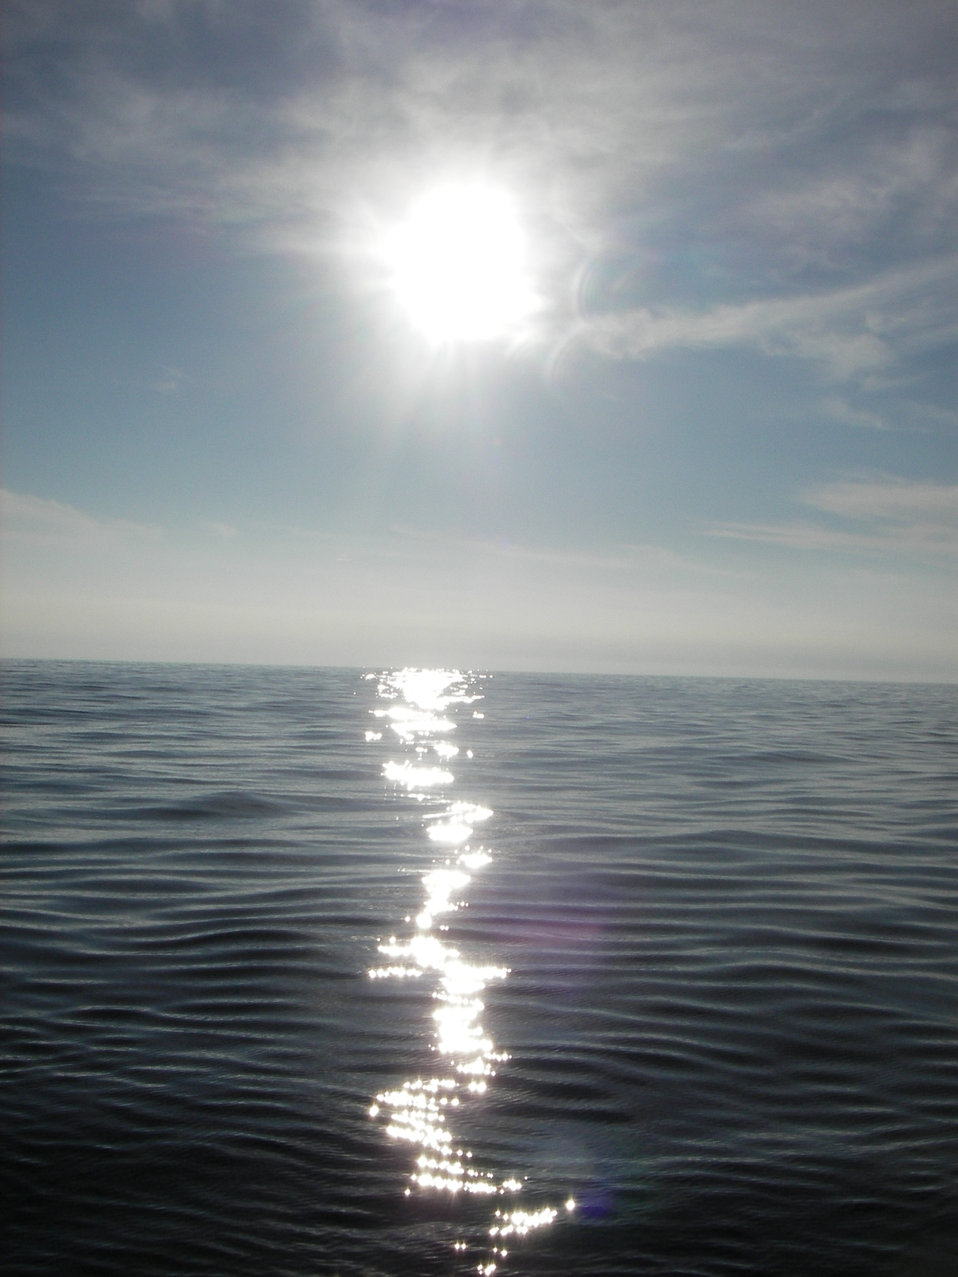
Sunlight sparkling on a tropic sea